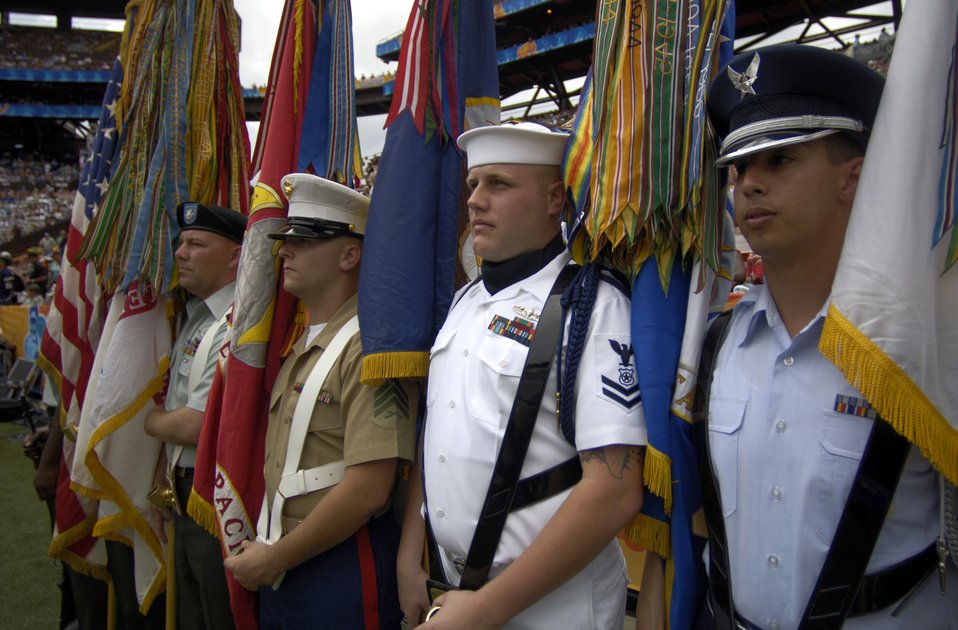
Pro Bowl honors

ALOHA STADIUM, Hawaii (AFPN) -- Senior Airman Derrick Martinez and the multi-service honor guard stand at attention in the opening ceremony of the 2006 Pro Bowl football game Feb. 12. Airman Martinez is with the 15th Communications Squadron at Hickam Air Force Base, Hawaii.